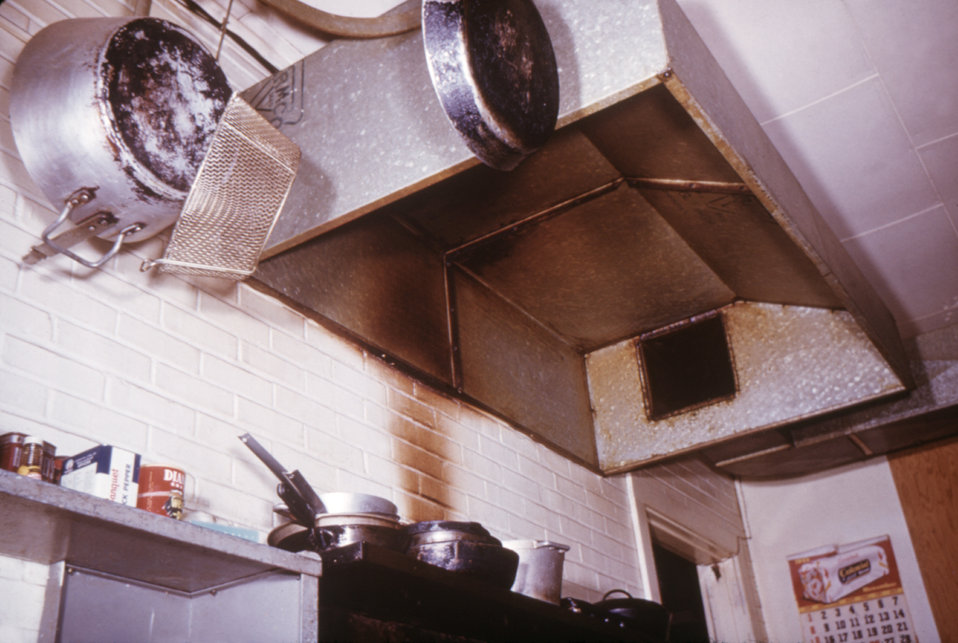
This poorly maintained kitchen range hood was found to be greasy, which could have predisposed it to cause a fire.